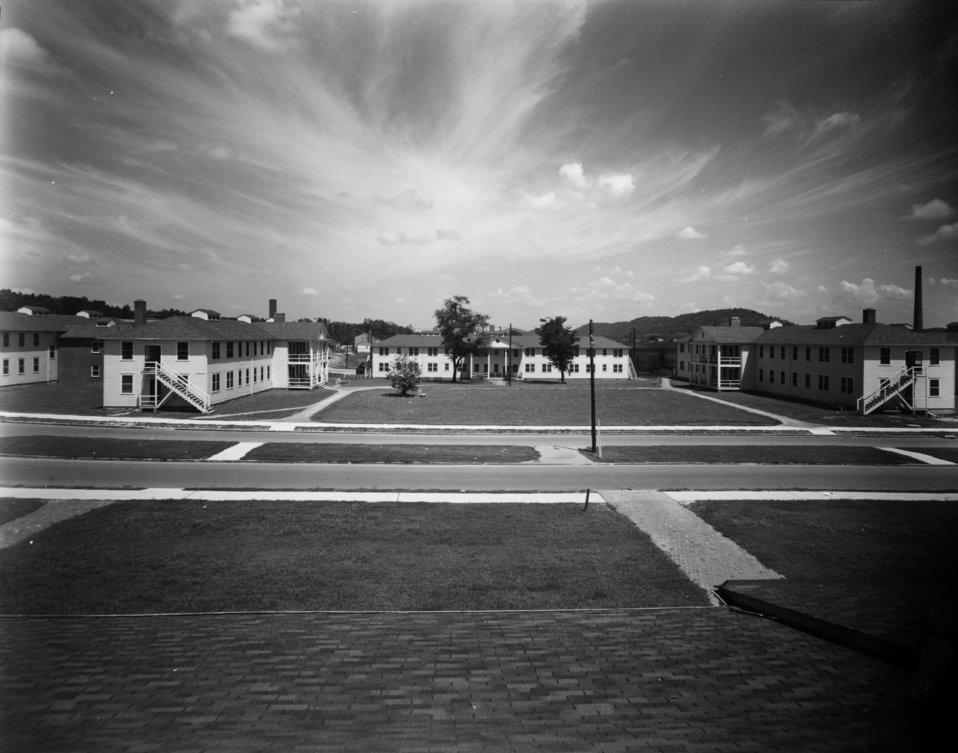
Housing at Oak Ridge